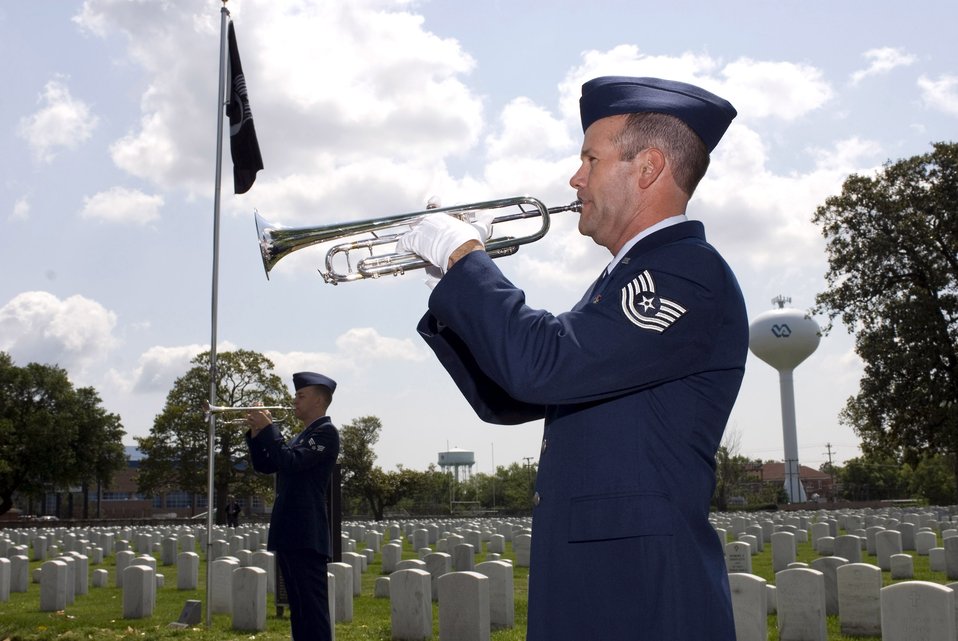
'Day is done'

Retired Tech. Sgt. Robert Havener (foreground) and Senior Airman Justin Hunniecutt play